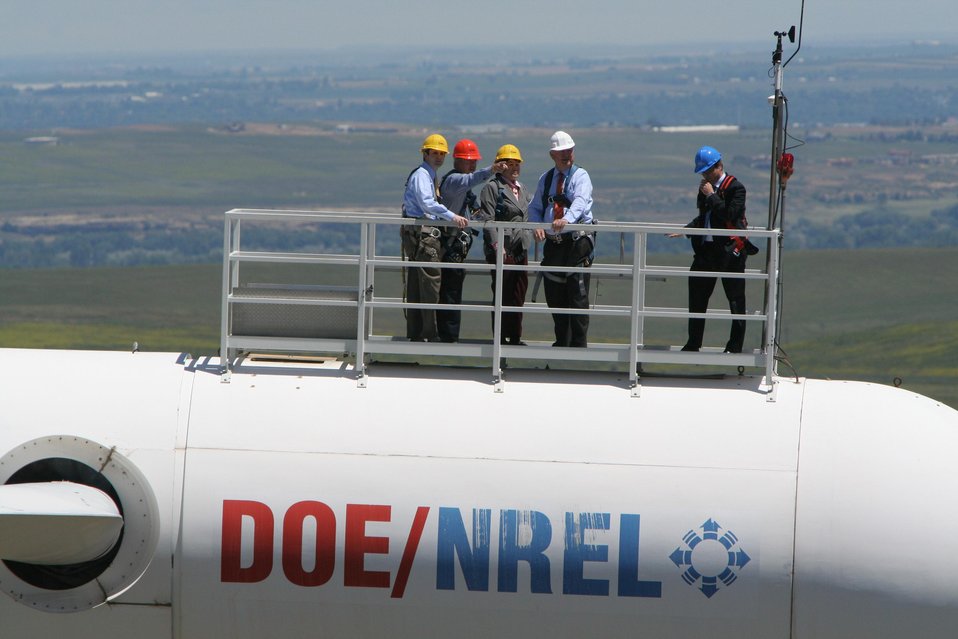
SECRETARY OF ENERGY SAMUEL BODMAN ON TOP A WIND TURBINE AT NREL'S NATIONAL WIND TECHNOLOGY CENTER.

SECRETARY BODMAN TOURED THE NATIONAL RENEWABLE ENERGY LABORATORY ON A VISIT TO THE SITE ON JUNE 13, 2005.